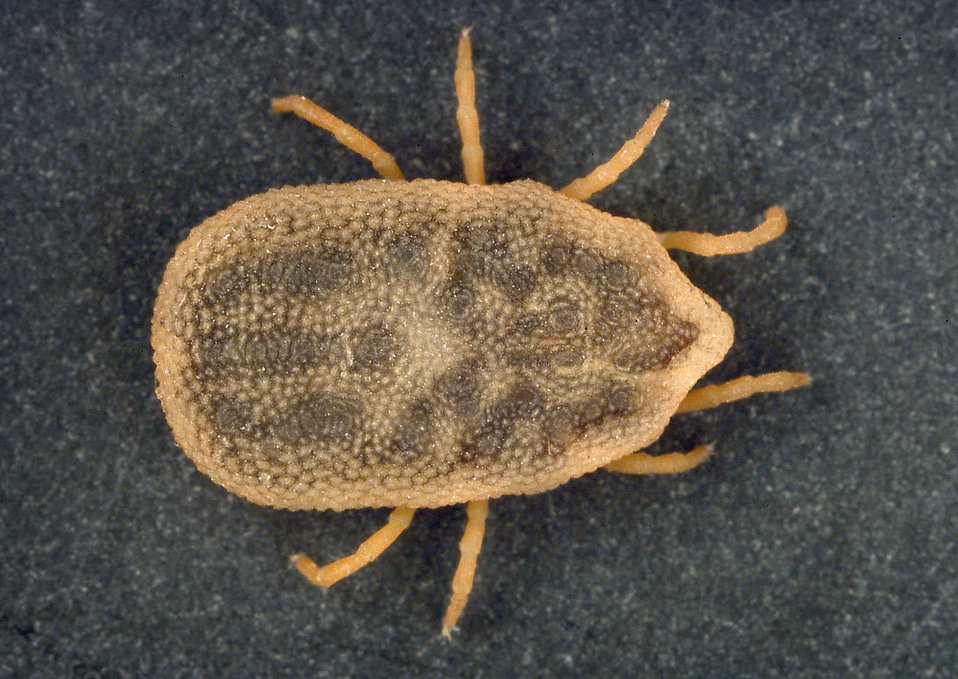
This is a dorsal view of the 'soft tick' Carios kelleyi, formerly Ornithodoros kelleyi, or the 'Bat Tick'.